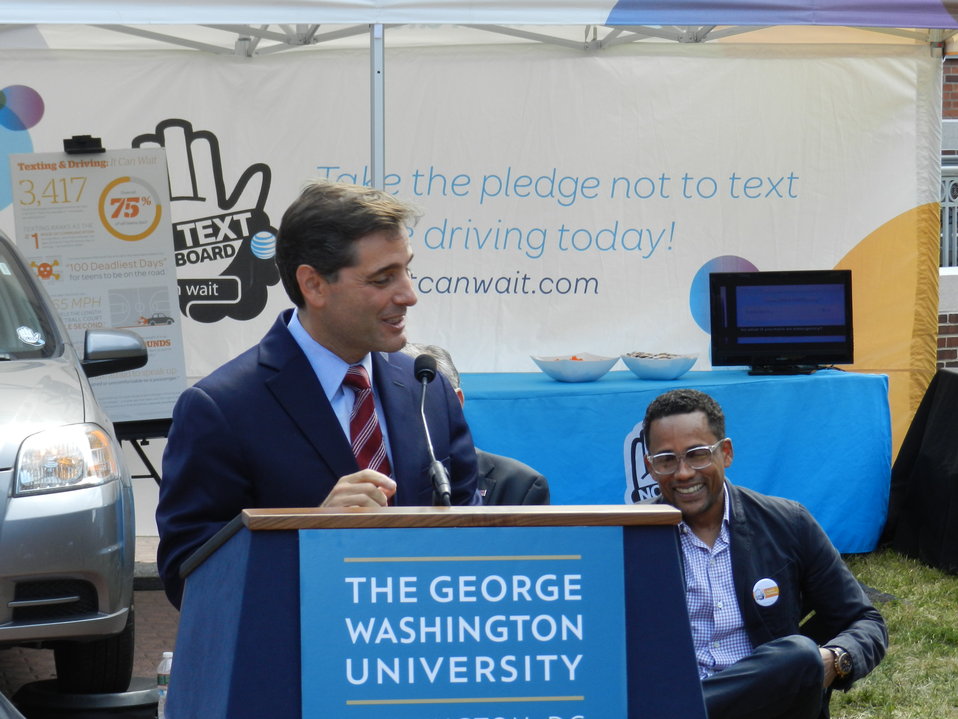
It Can Wait Pledge Day 9.19.12

Chairman Genachowski speaking at the ‘No Text On Board’ Pledge Day Event, The George Washington University, Washington, D.C. September 19, 2012